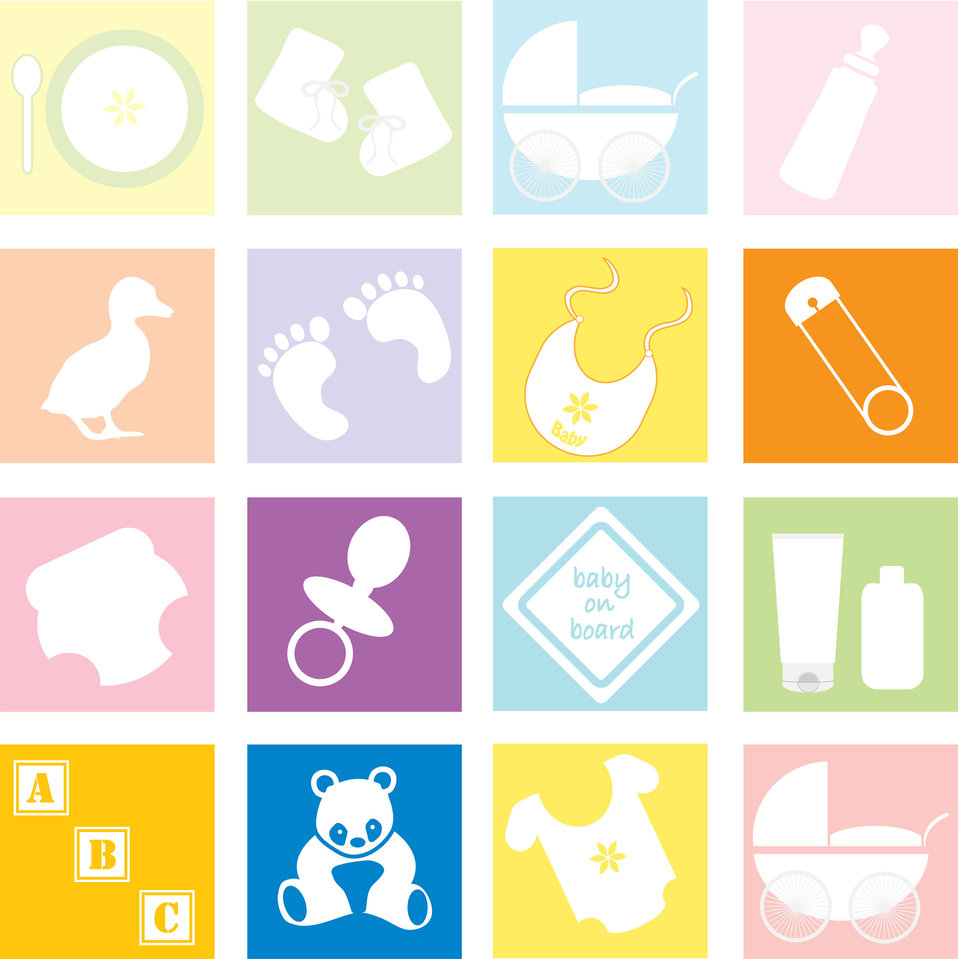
Baby elements

Set of colorful tiles with baby items, pacifier, bottle, stroller.